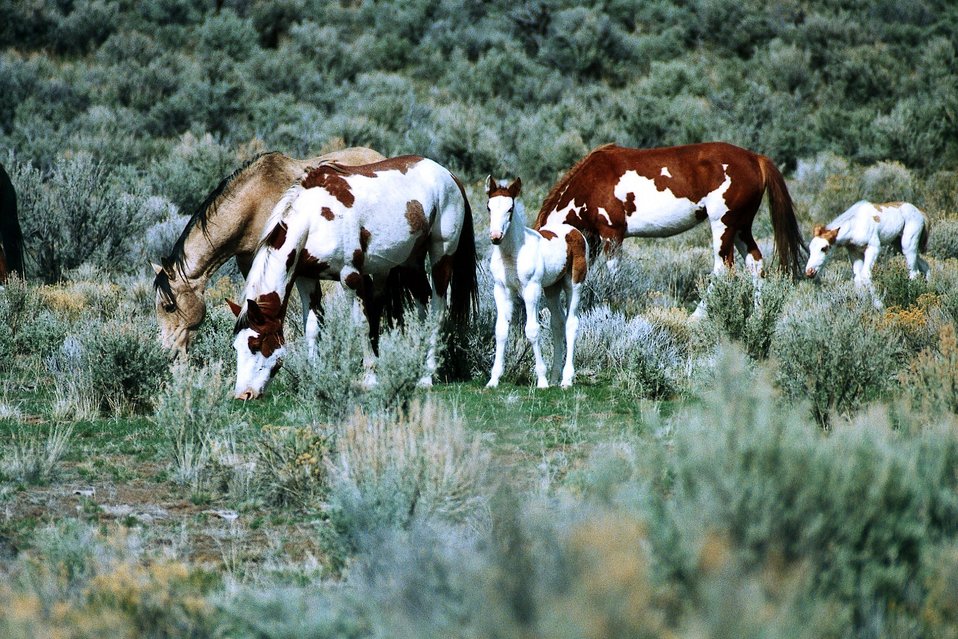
Medium shot of three mares and two colts grazing on South Steens prairie.